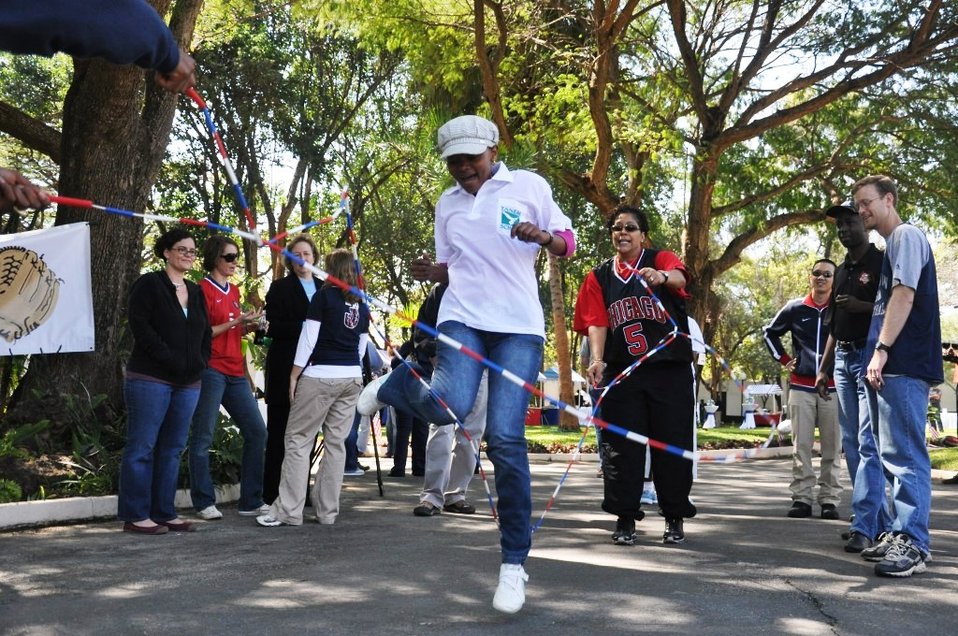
Americans and Zambians compete in a Double Dutch contest at the U.S. National Day commemoration on June 12, 2010, at the Ambassador's residence in Lusaka, Zambia.